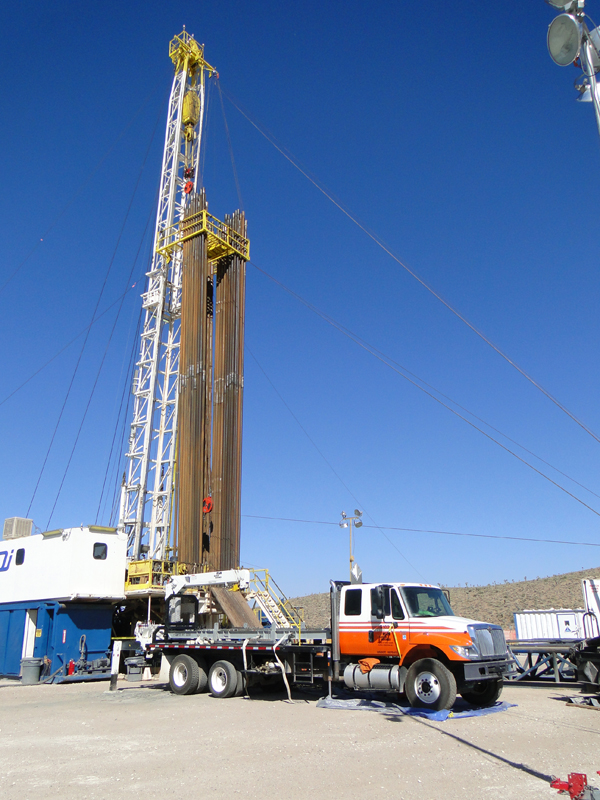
Recovery Act Boosts Environmental Cleanup at Nevada Site

A drill rig is shown here at new well site on Pahute Mesa.

The estimated $54 million in Recovery Act money allocated to NNSS has accelerated soil remediation, building demolition, and includes about $10 million for waste disposal. The funding is moving NNSS toward its cleanup goals faster and increasing its capabilities to dispose nuclear waste originating throughout the DOE Complex.